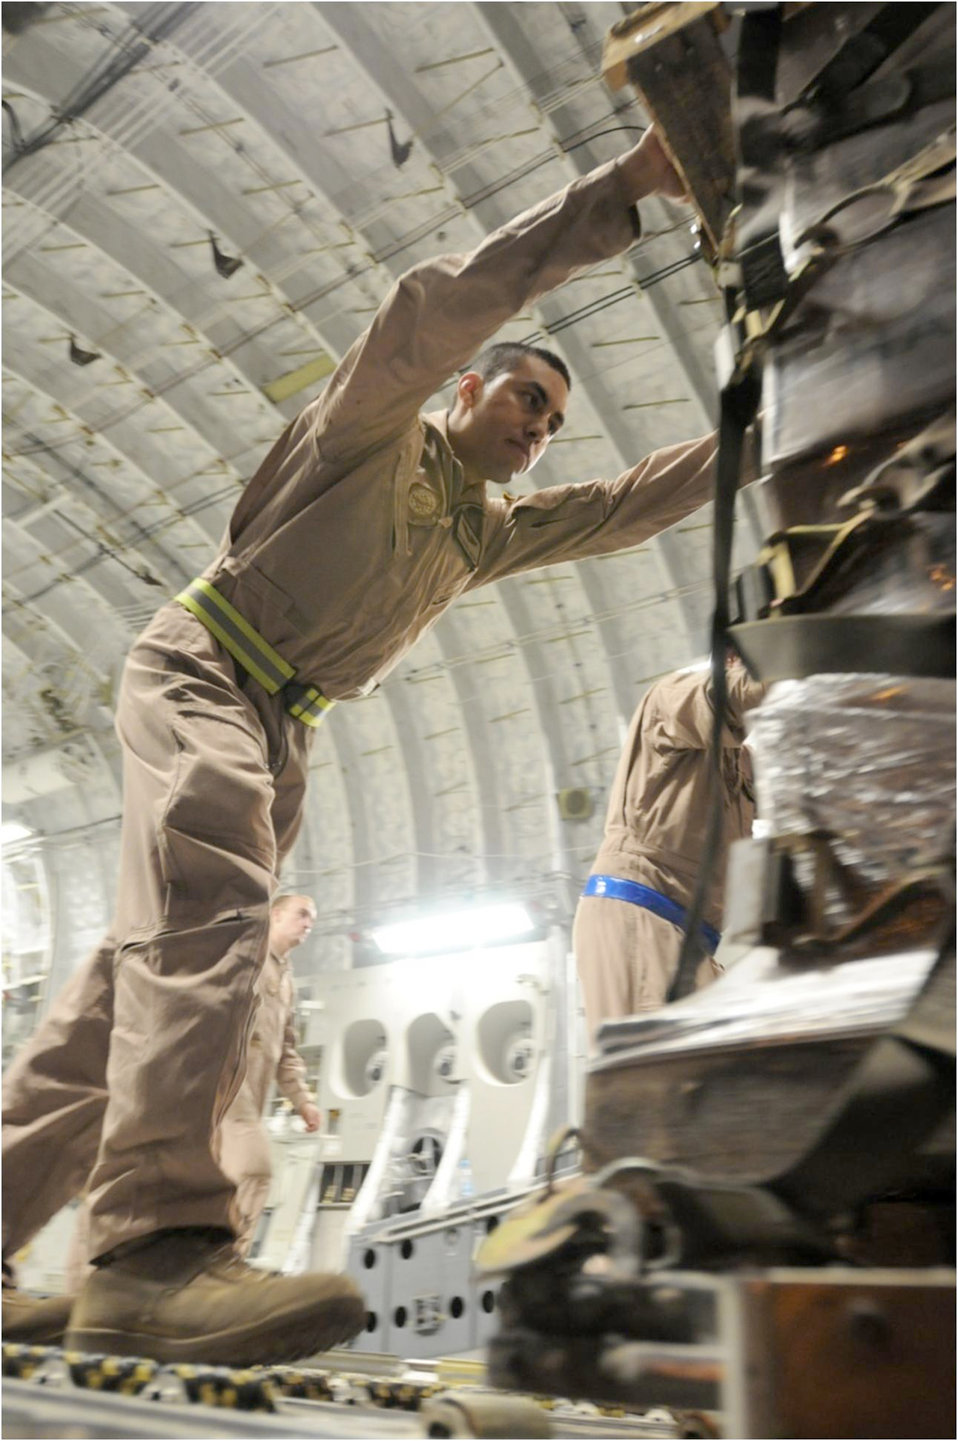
Teamwork provides relief

Staff Sgt. Manuel Chacon pushes a pallet of halal meals off a C-17 Globemaster III that carried them Aug. 2, 2010, to northwestern Pakistan. These meals are some of the 345 thousand that have been delivered since July 31, 2010, as part of the humanitarian flood relief assistance provided to the area that's been hit by monsoon rains in recent days. Sergeant Chacon is a loadmaster assigned to the 817th Expeditionary Airlift Squadron at the Transit Center at Manas, Kyrgyzstan.